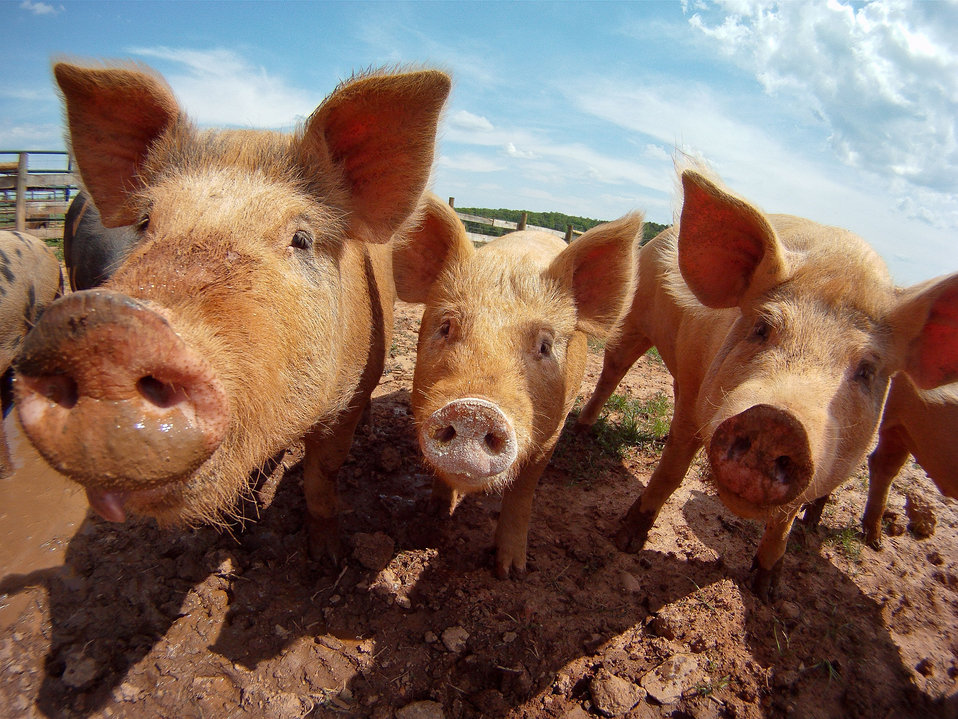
Pigs at Keenbell Farm are pasture raised by 3rd generation farmer CJ Isbell in Rockville, VA, on Friday, May 6, 2011. The farm was established in 1951, and produces grass-fed beef, pastured pork, and free-range eggs beyond organic standards. Keenbell Farms pork products range from sausage, to bacon, pork chops, roasts, bratwurst, and many more. A majority of their diet is grass and roots. They are offered corn, soybean, minerals, and a hay mixture that was developed by the farm. Raising the pigs on pastures reduces odor problems, and avoids hazardous waste issues by distributing the manure. Pastures are rotated at least, every 90 days to allow the grass and land to re-grow. Keenbell and other farms produce meat products for Fall Line Farms food hub that offer a wide variety of household food staples and specialty items. Members can pick their customized orders from an ever changing inventory of fruits, vegetables, meats, soaps, eggs, cheeses, flowers, honey, pastas, sauces, syrups, baked goods, mushrooms, flour and grains. Suppliers post what they have to sell on Lulus Local Food online listing where customers can make their selection. Every Thursday, suppliers team up to deliver customized orders to, one of several pick-up points, designated by the customer in or around the Richmond, VA area.